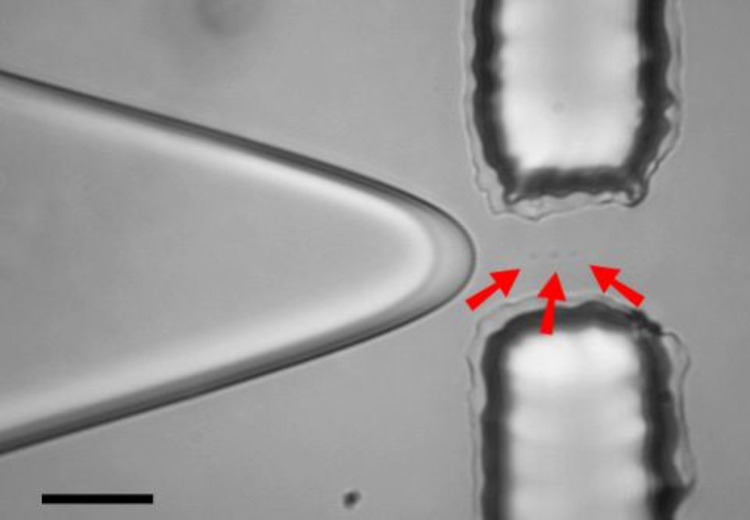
Nanochemistry; Single Molecules; Microdroplets

The NIST 'on-demand' single-molecule drop dispenser: Water flows through a microfluidic channel, roughly 35 microns wide, and enters a narrow constriction where it breaks up into droplets. Varying the width of the constriction changes the size of the drops and lacing the water with desired molecules of just the right concentration causes the resulting droplets to pick up single molecules of interest 99 percent of the time.